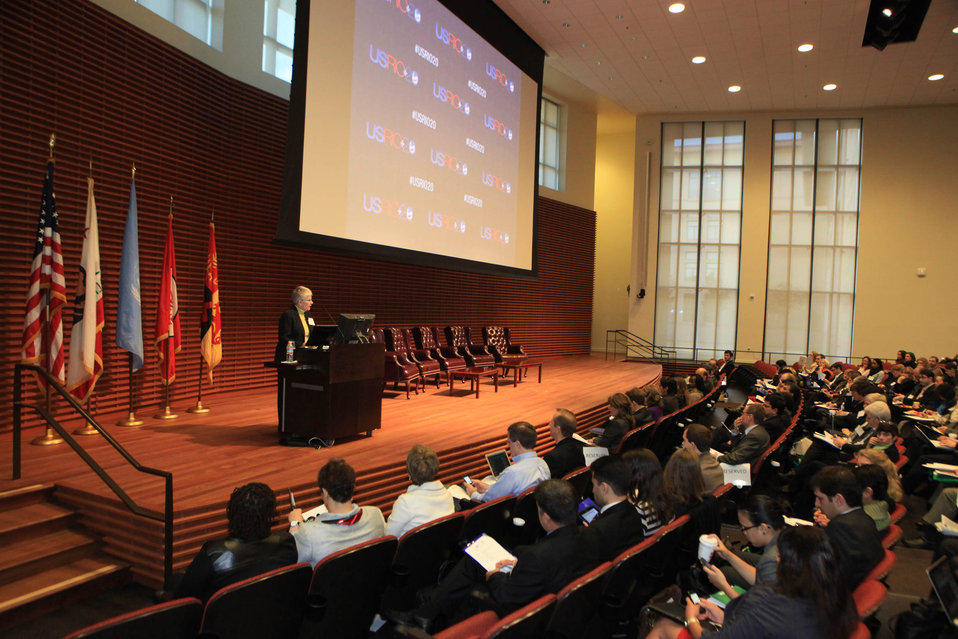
Assistant Secretary Jones Introduces EPA Administrator Jackson

Assistant Secretary of State for U.S. Department of State - Bureau of Oceans, Environment and Science Dr. Kerri-Ann Jones introduces Environmental Protection Agency (EPA) Administrator Lisa P. Jackson at the USRIO 2.0 conference at the Stanford Graduate School of Business Knight Center in Stanford, California, on February 3, 2012.